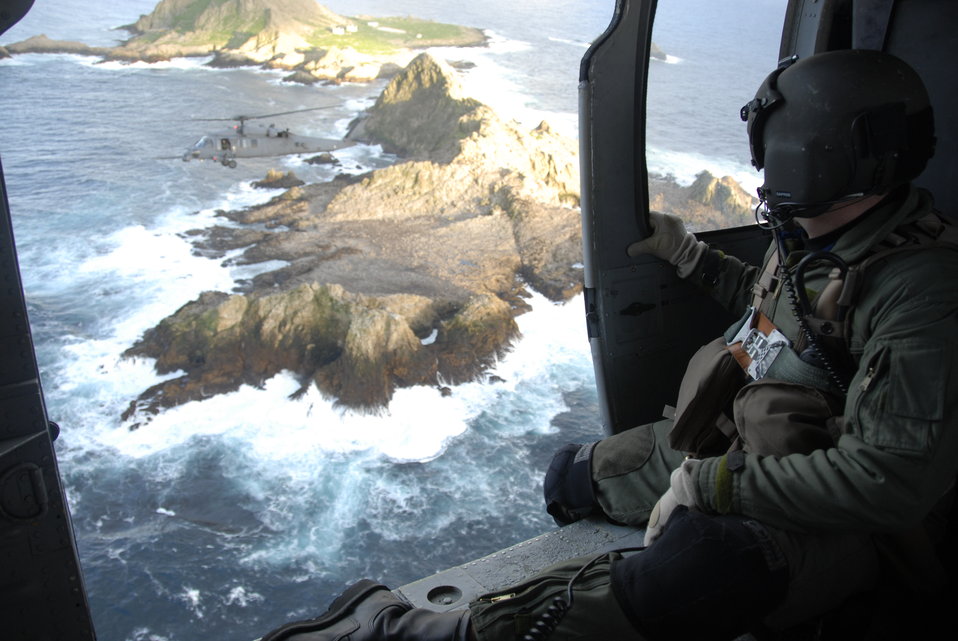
FARALLONS BATTERY MISSION

Staff Sgt. Andrew Hedin, flying in an HH-60G Pave Hawk helicopter, observes another Pave Hawk over Farallon Island, which sits some 30 miles west of San Francisco. The helicopters and their crews, from the California Air National Guard's 129th Rescue Wing at Moffett Federal Airfield, Calif., are supporting the U.S. Fish and Wildlife Service by helping transport new photovoltaic batteries to power a lighthouse and workshop at the FWS research facility on the island. Sergeant Hedin is an HH-60G flight engineer with the 129th RQW.